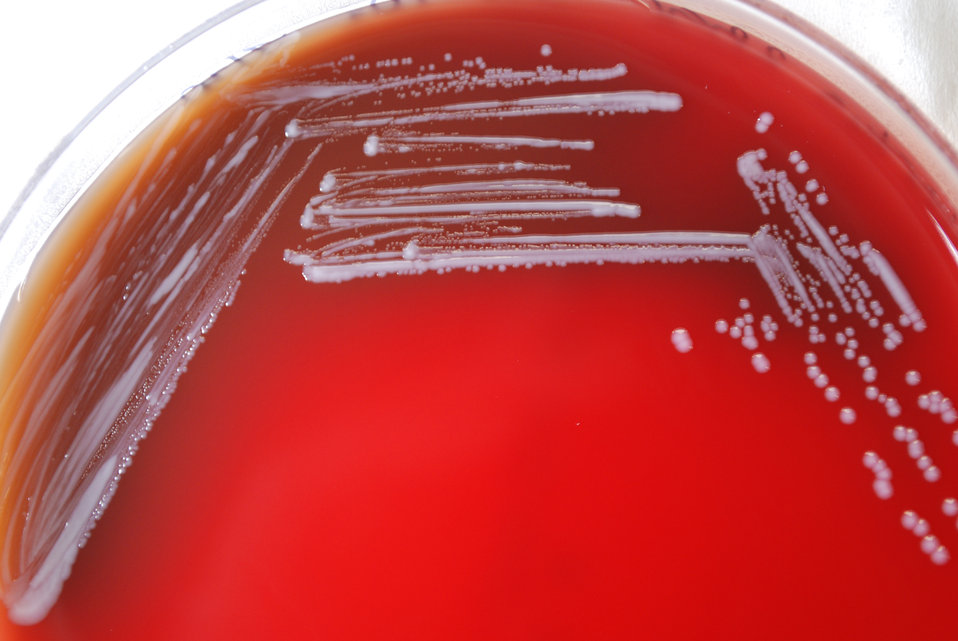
An enlarged view of PHIL 12280, this photograph depicts the colonial morphology displayed by Gram-negative Brucella abortus bacteria, which was grown on a medium of sheep's blood agar, for a 72 hour time period, at a temperature of 37�C. This Petri dish and its contents were incubated in a CO2 incubator.How is brucellosis transmitted to humans, and who is likely to become infected?